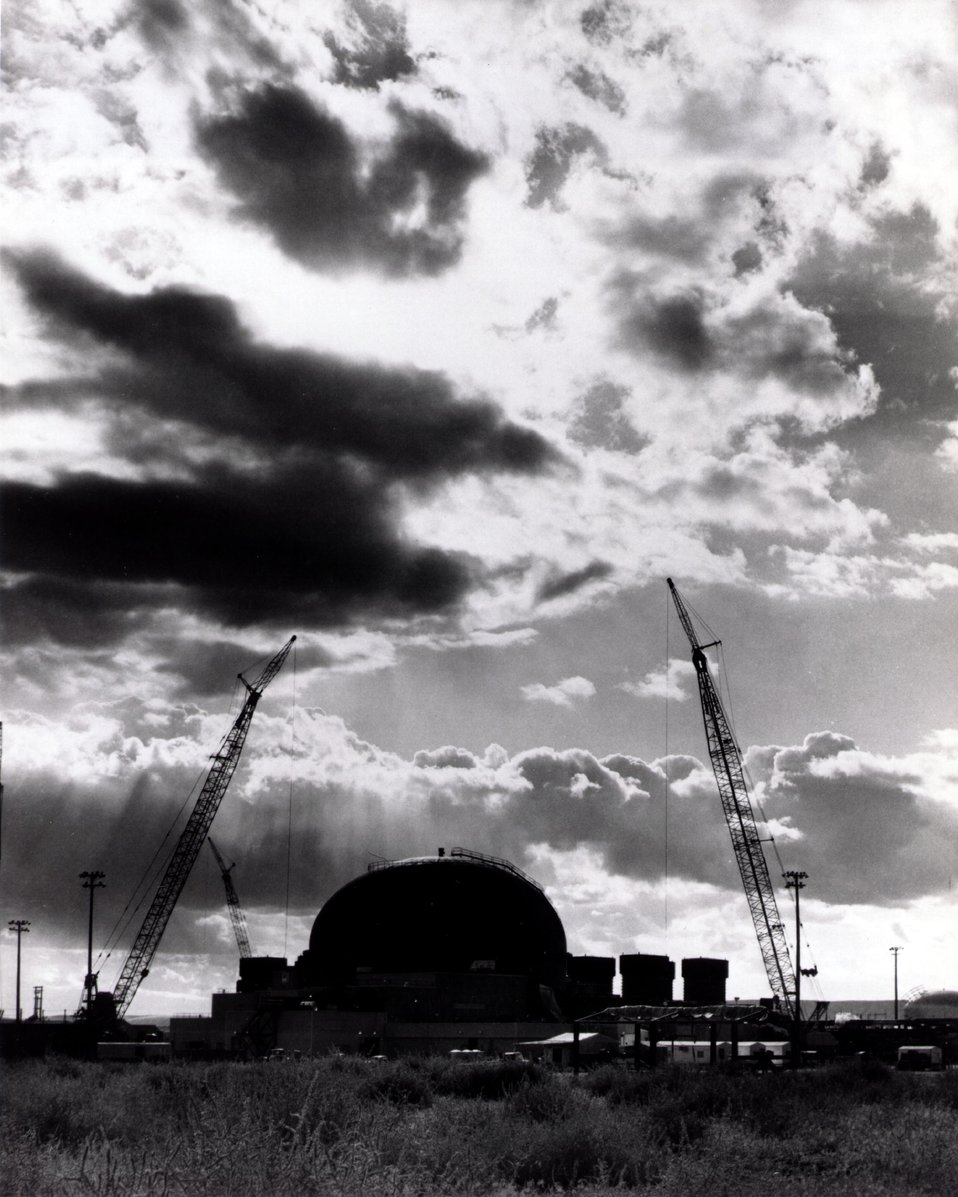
Construction activities at the Energy Research and Development Administration's Fast Flux Test Facility near Richland, Washington. c. 1976.